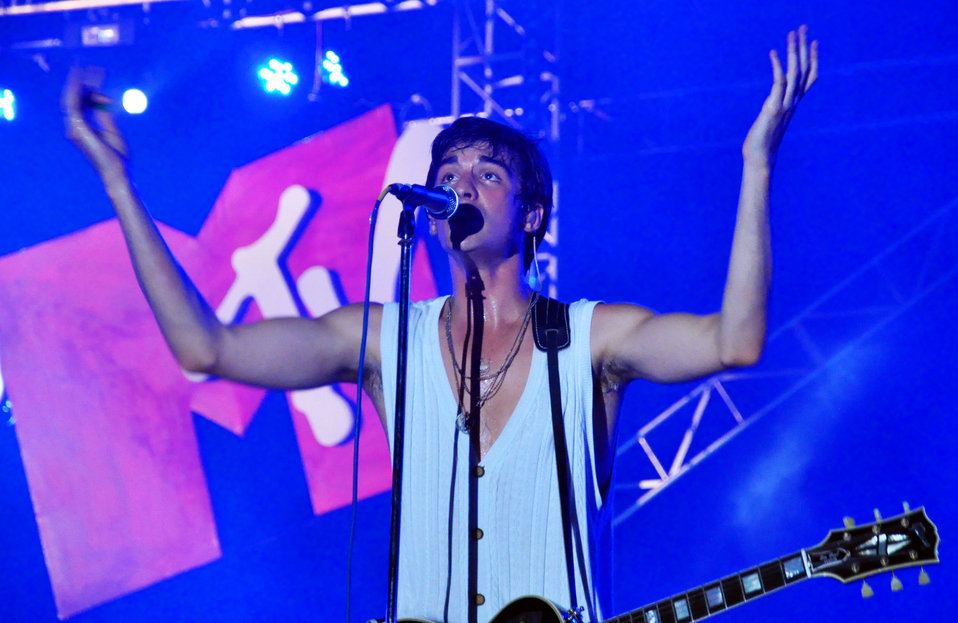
USAID, MTV EXIT concert series in Vietnam, 2010.

The Click Five performs in Ho Chi Minh City on April 17 as part of the USAID, MTV EXIT concert series.